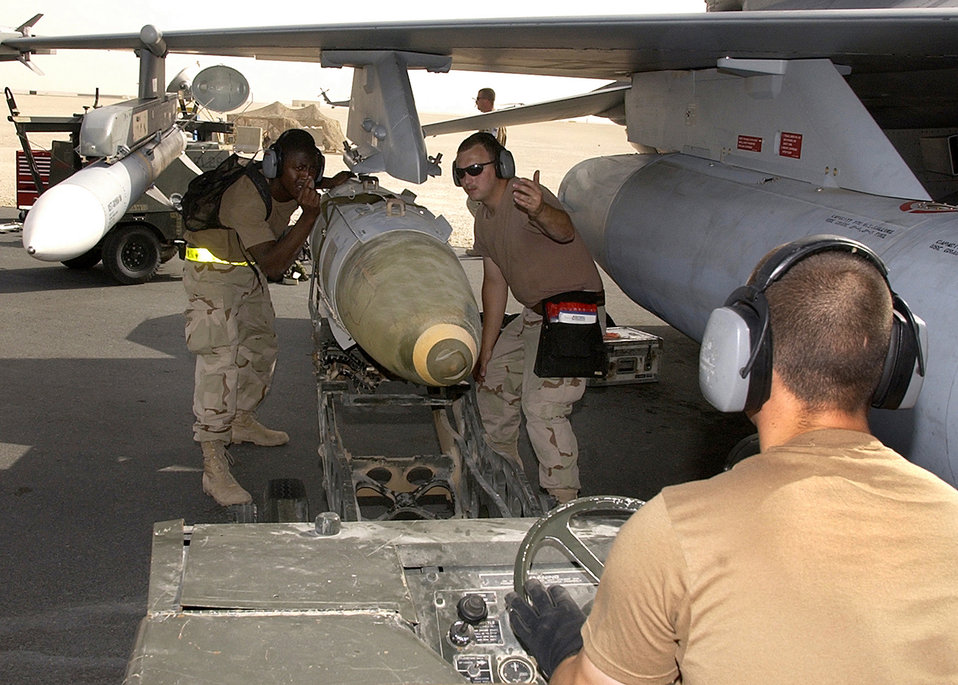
F-16 weapons load

OPERATION IRAQI FREEDOM -- A weapons load crew, 22nd Expeditionary Fighter Squadron, load a GBU-31 bomb on an F-16CJ from Spangdalem Air Base, Germany before a mission on March 24, 2003 The F-16CJs are assigned to this forward-deployed air base in support of Operation Iraqi Freedom.